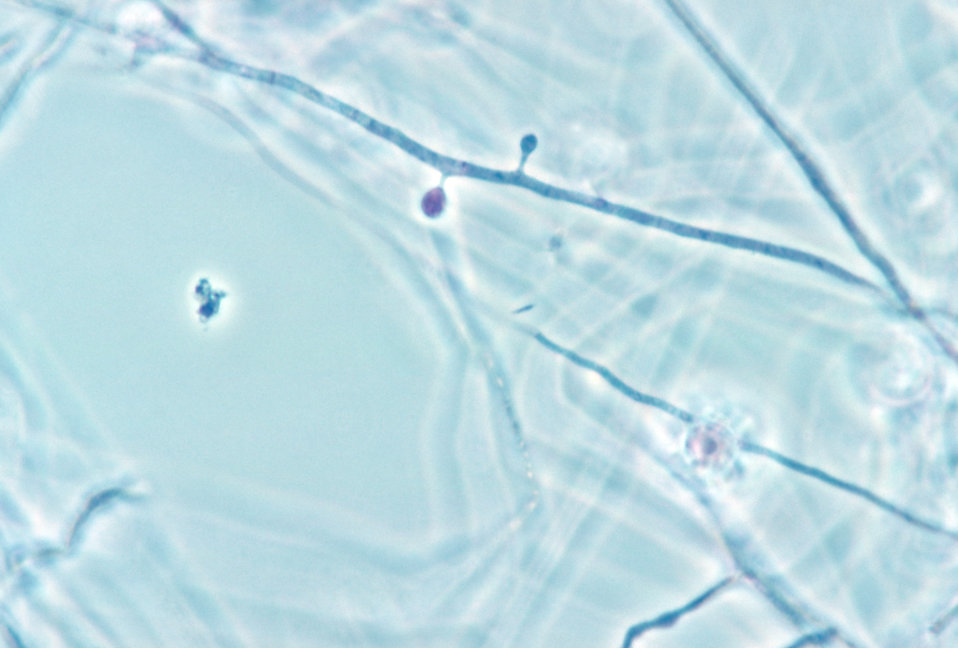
This photomicrograph shows the microconidia of the fungal species Histoplasma capsulatum.